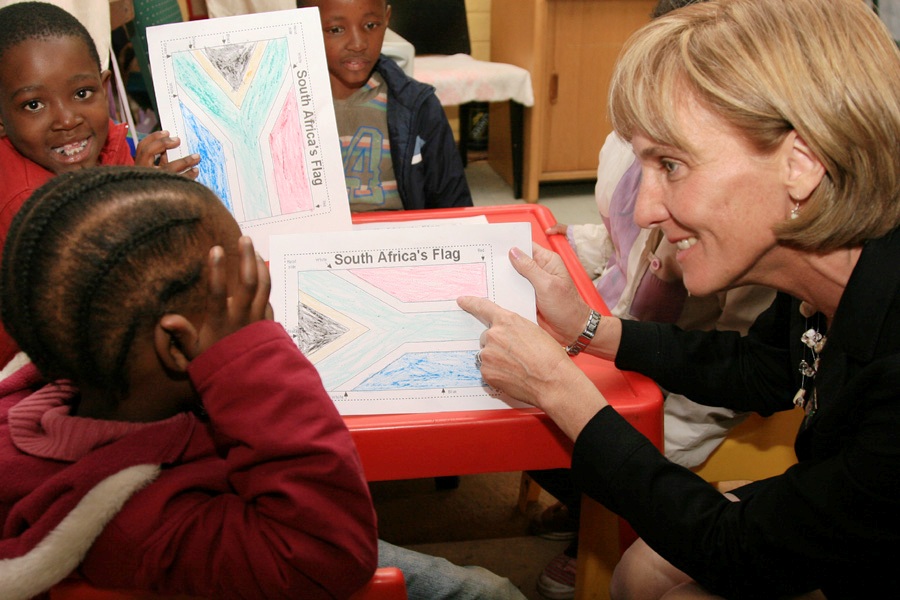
Liz Berry Gips Interacts With Children

Liz Berry Gips, wife of U.S. Ambassador to the South Africa Donald H. Gips, interacts with children during her visit to Mapetla Day Care Centre in Soweto, Johannesburg, South Africa, on June 10, 2010.